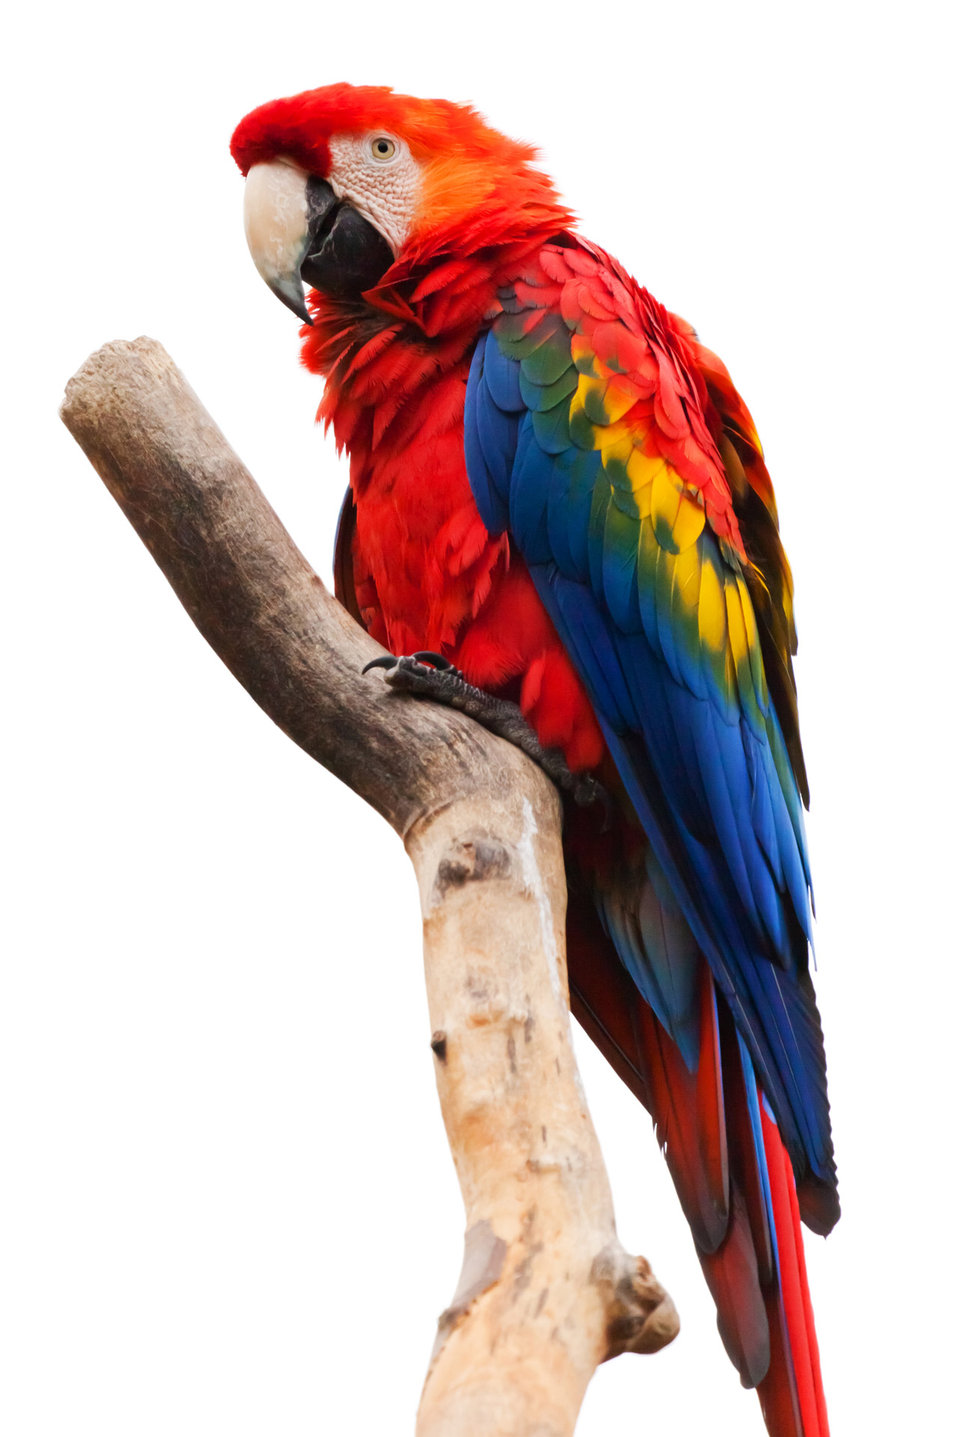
Scarlet macaw isolated

Scarlet macaw sitting on a branch isolated on white background.